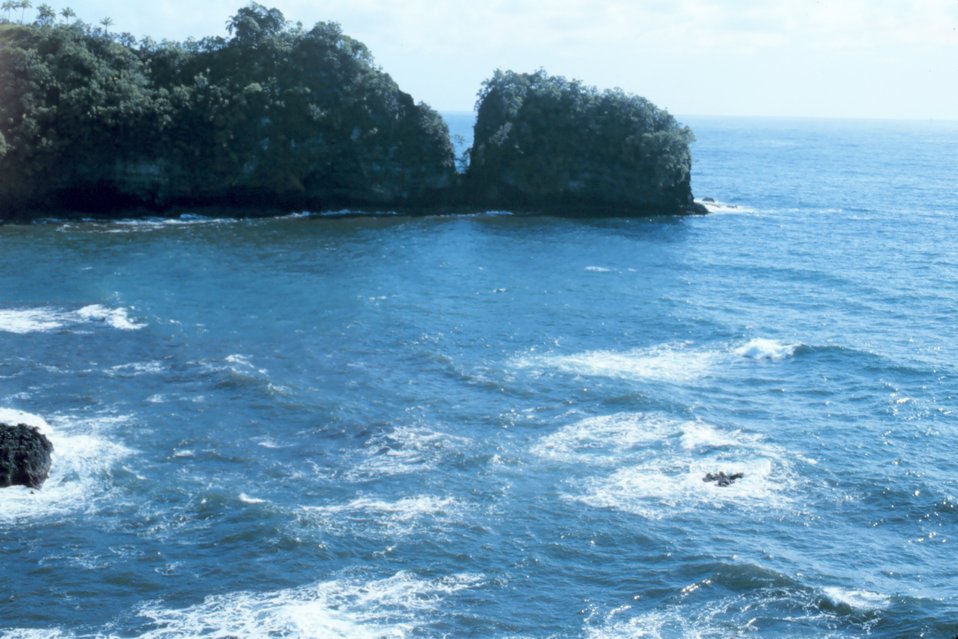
A coastal scene north of Hilo